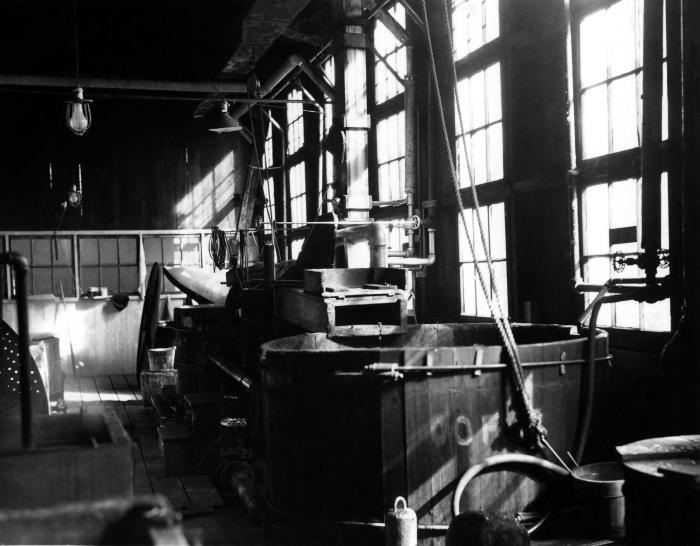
This historical image was provided by the Center for Disease Control's (CDC), National Institute for Occupational Safety and Health (NIOSH). The photograph, shot inside a Connecticut fur processing plant, depicted a large wooden vat, in which processed furs were soaked, or rinsed prior to them becoming hats.